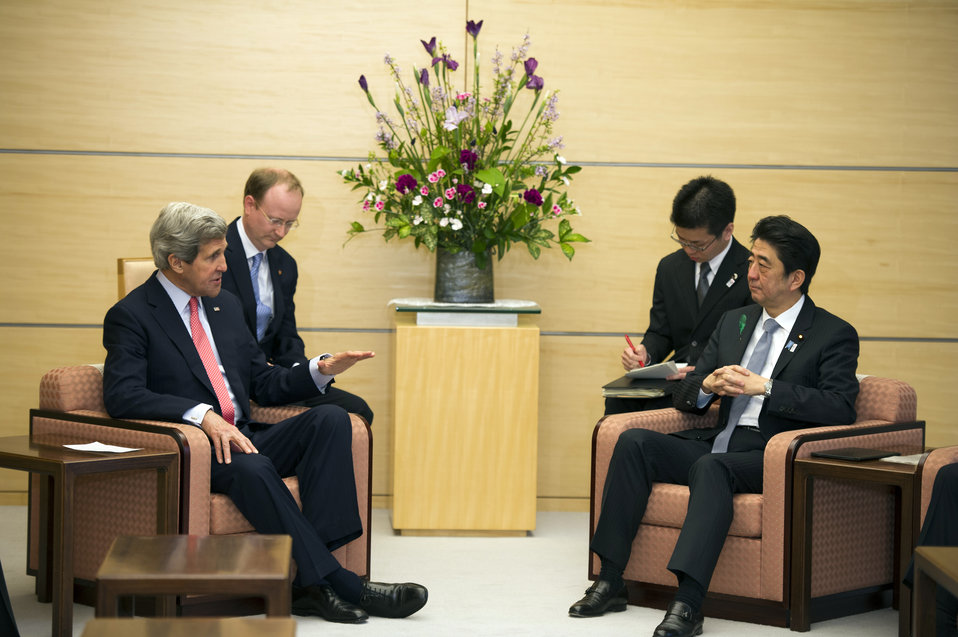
Secretary Kerry Meets Japanese Prime Minister Abe

U.S. Secretary of State John Kerry meets with Japanese Prime Minister Shinzo Abe during his visit to Tokyo, Japan, on April 15, 2013.